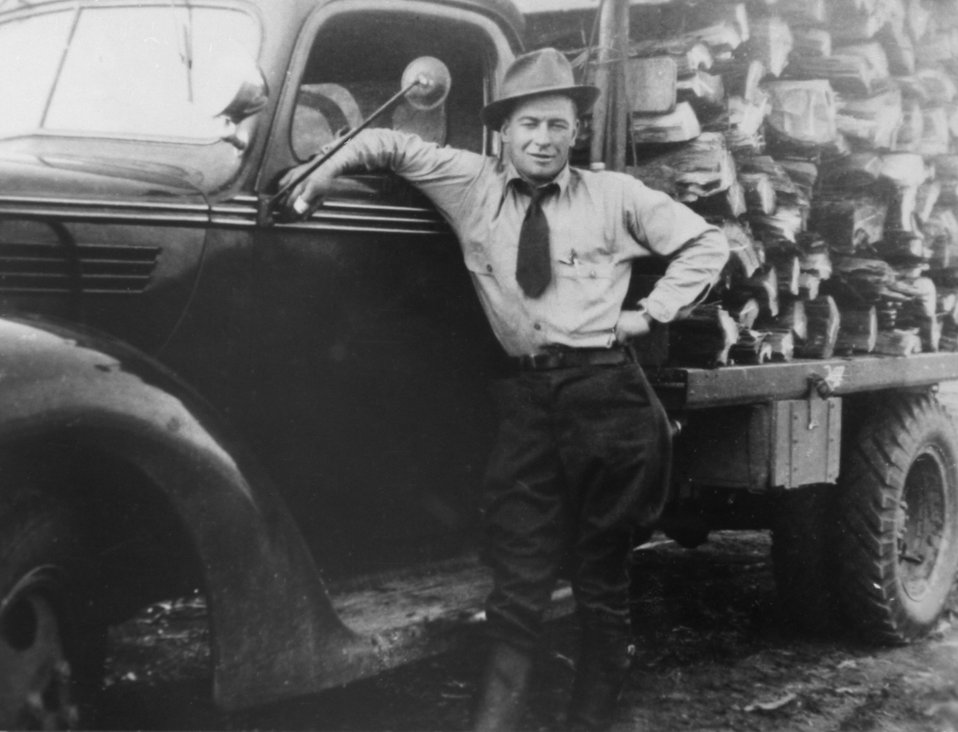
Joe Urbanek, Grazing Serive Truck Dirver with load of split Juniper fence posts cut by CCC cres in Alfalfa, Oregon area. Posts were transported all over eastern Oregn. Note the uniform, complete with tie. 1939 Ford truck. Circa 1940